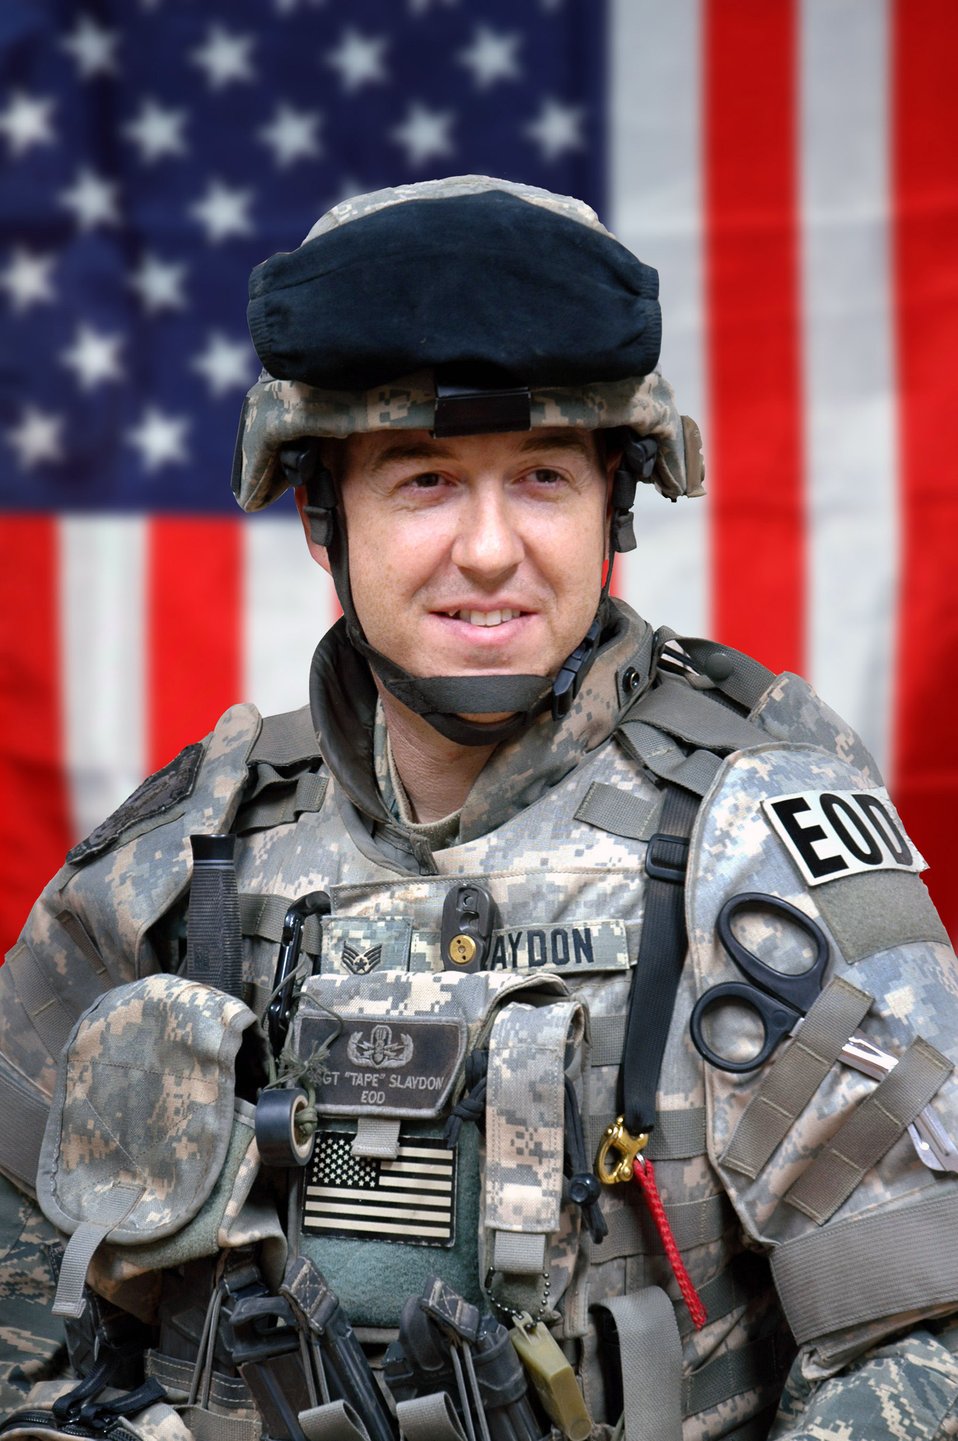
Wounded Warrior: Air Force family helps Purple Heart recipient, wife

Staff Sgt. Matthew Slaydon prior to the attack which robbed him of his sight and one arm -- plus a multitude of facial lacerations and a collapsed lung. Sergeant Slaydon was on a six-month deployment as an explosive ordnance disposal technician when on Oct. 24, 2007, an IED detonated 2 feet from his face.